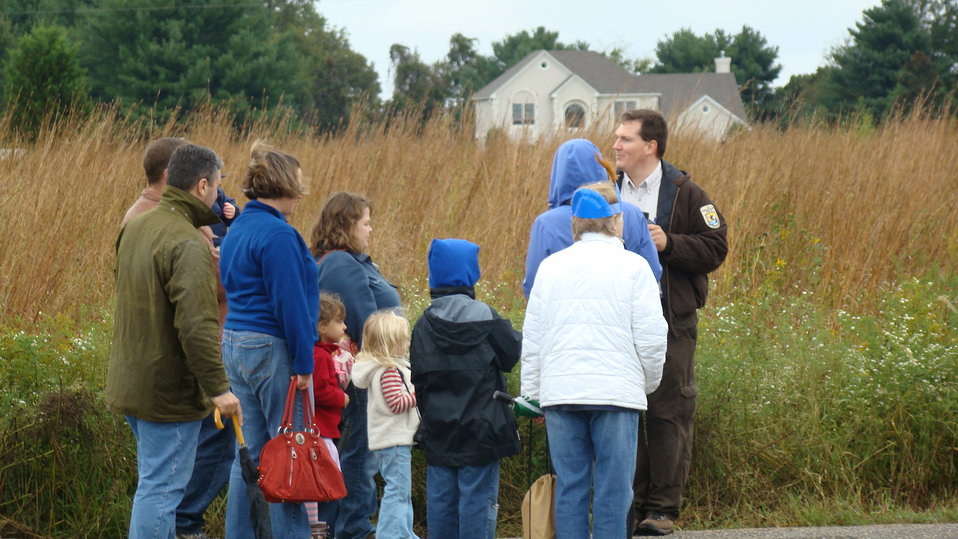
Rappahannock River Valley NWR 15th Anniversary

Refuge Manager Andy Hofmann presents 'Birds and Binoculars,' a bird identification activity.